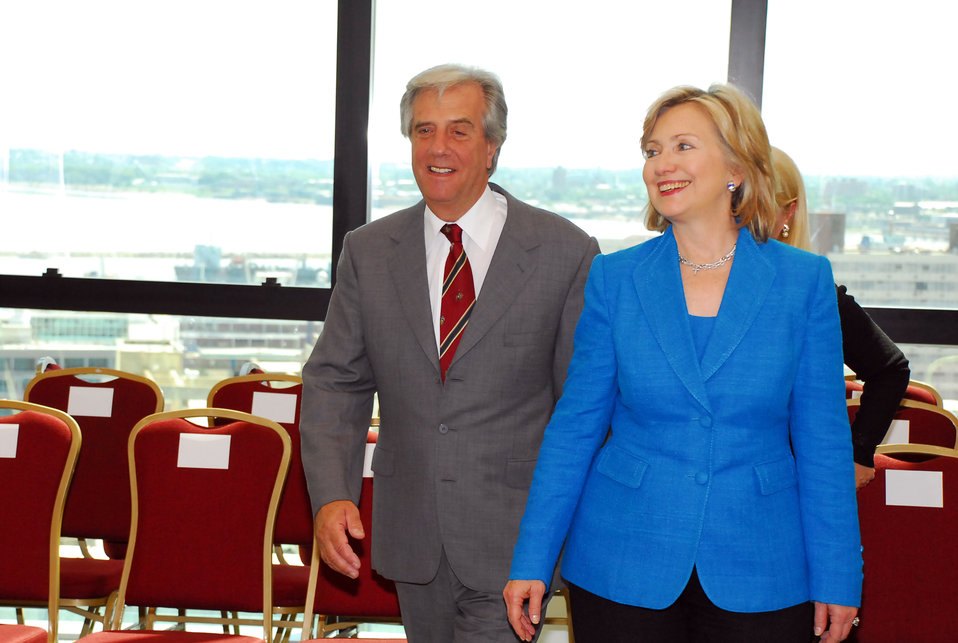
Secretary Clinton Meets With Uruguay President

U.S. Secretary of State Hillary Clinton and Uruguay President Tabaré Vázquez after their private meeting in Montevideo, Uruguay March 1, 2010.